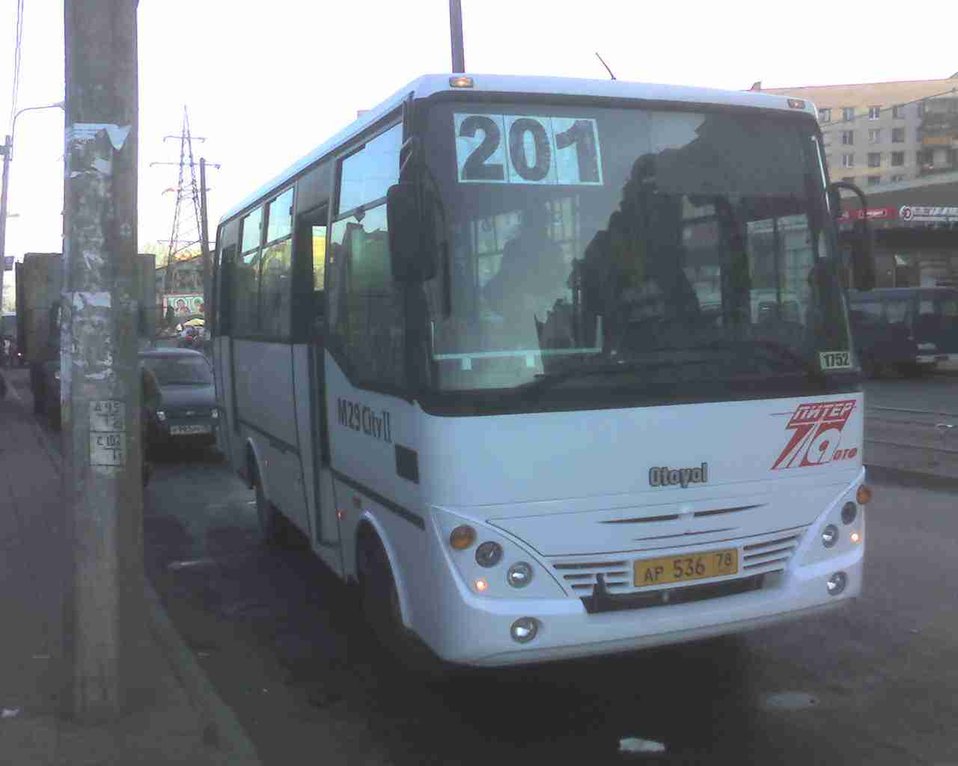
Русский: Автобус Otoyol M29 City II ООО 'Питеравто' в Санкт-Петербурге. Апрель 2007 года. Otoyol M29 City II bus (#1752) in Saint Petersburg, Russia.